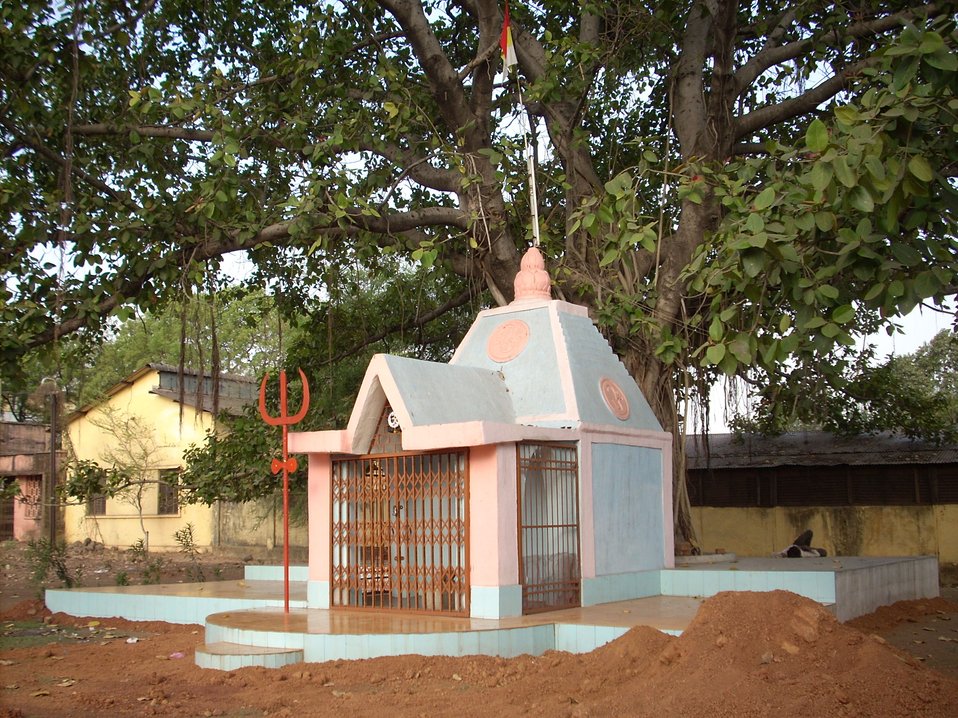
A temple in the campus of National Institute of Technology Raipur.